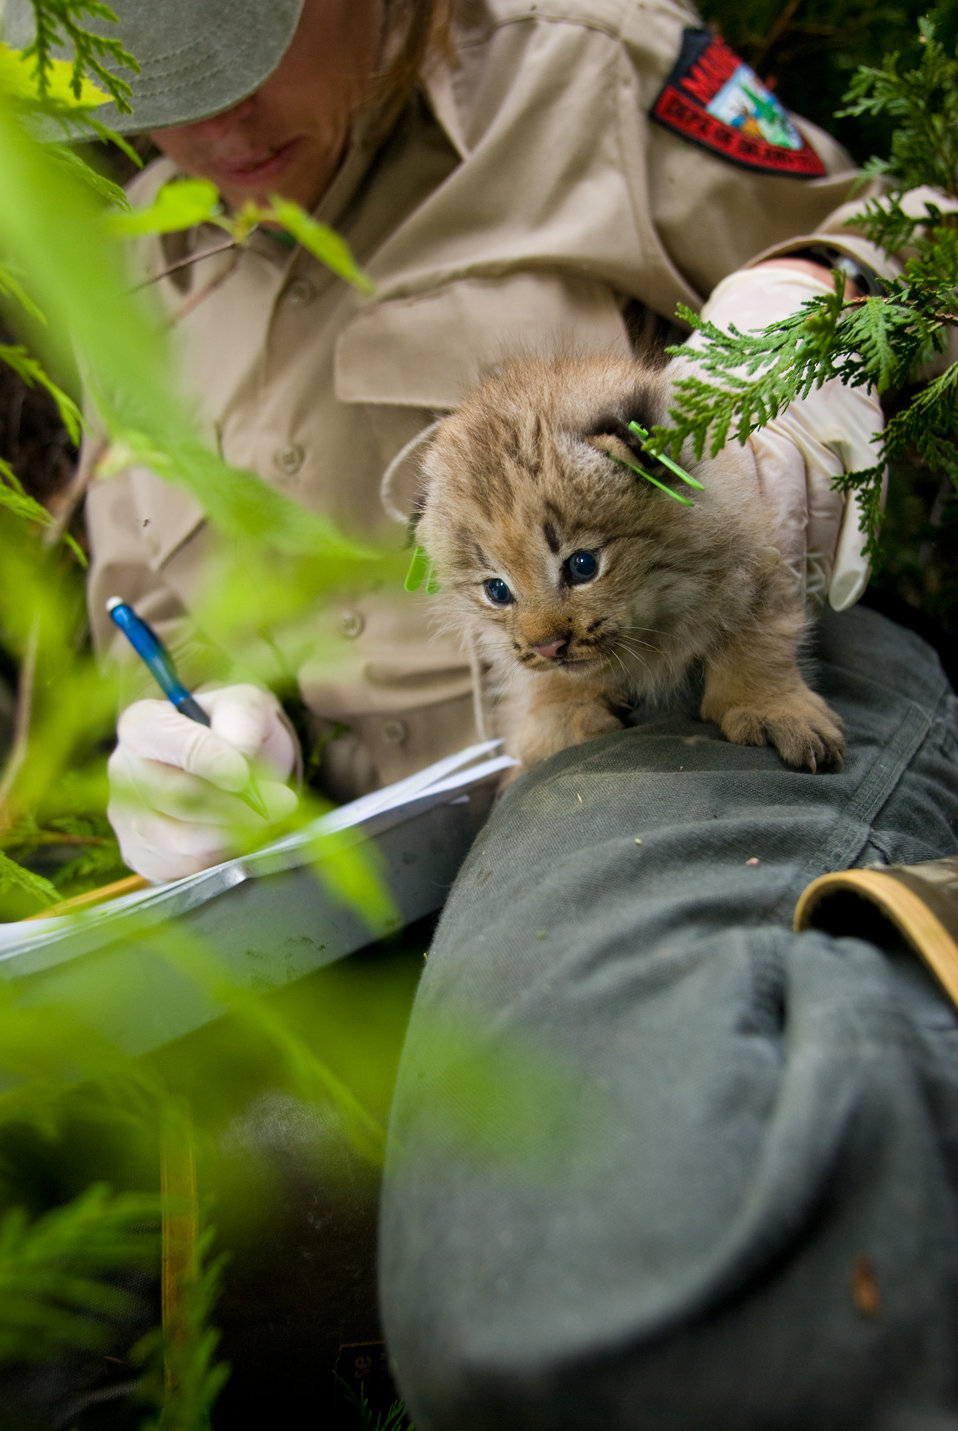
Canada Lynx kitten

A lynx kitten is held in place while a wildlife biologist documents their measurements.